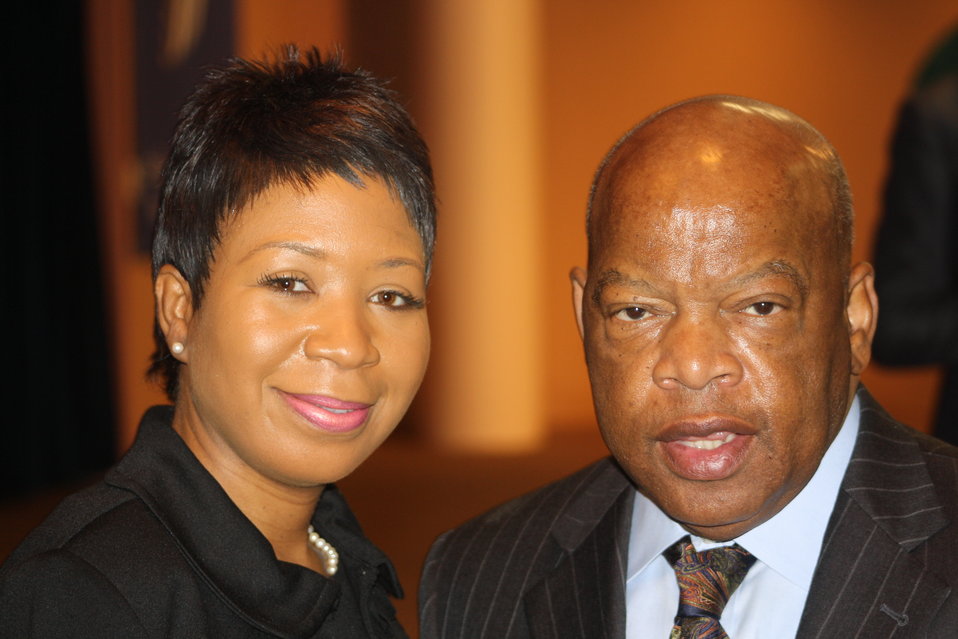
Faith-Based and Neighborhood Partnership launch at Atlanta's Carter Center